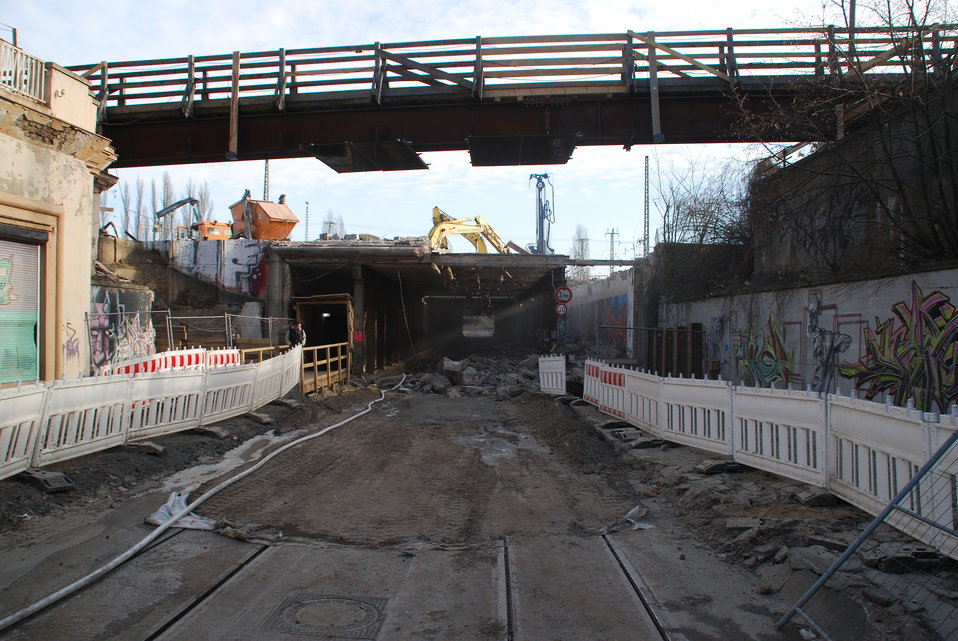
Abriss Bahnhofstunnel Frankfurt (Oder)